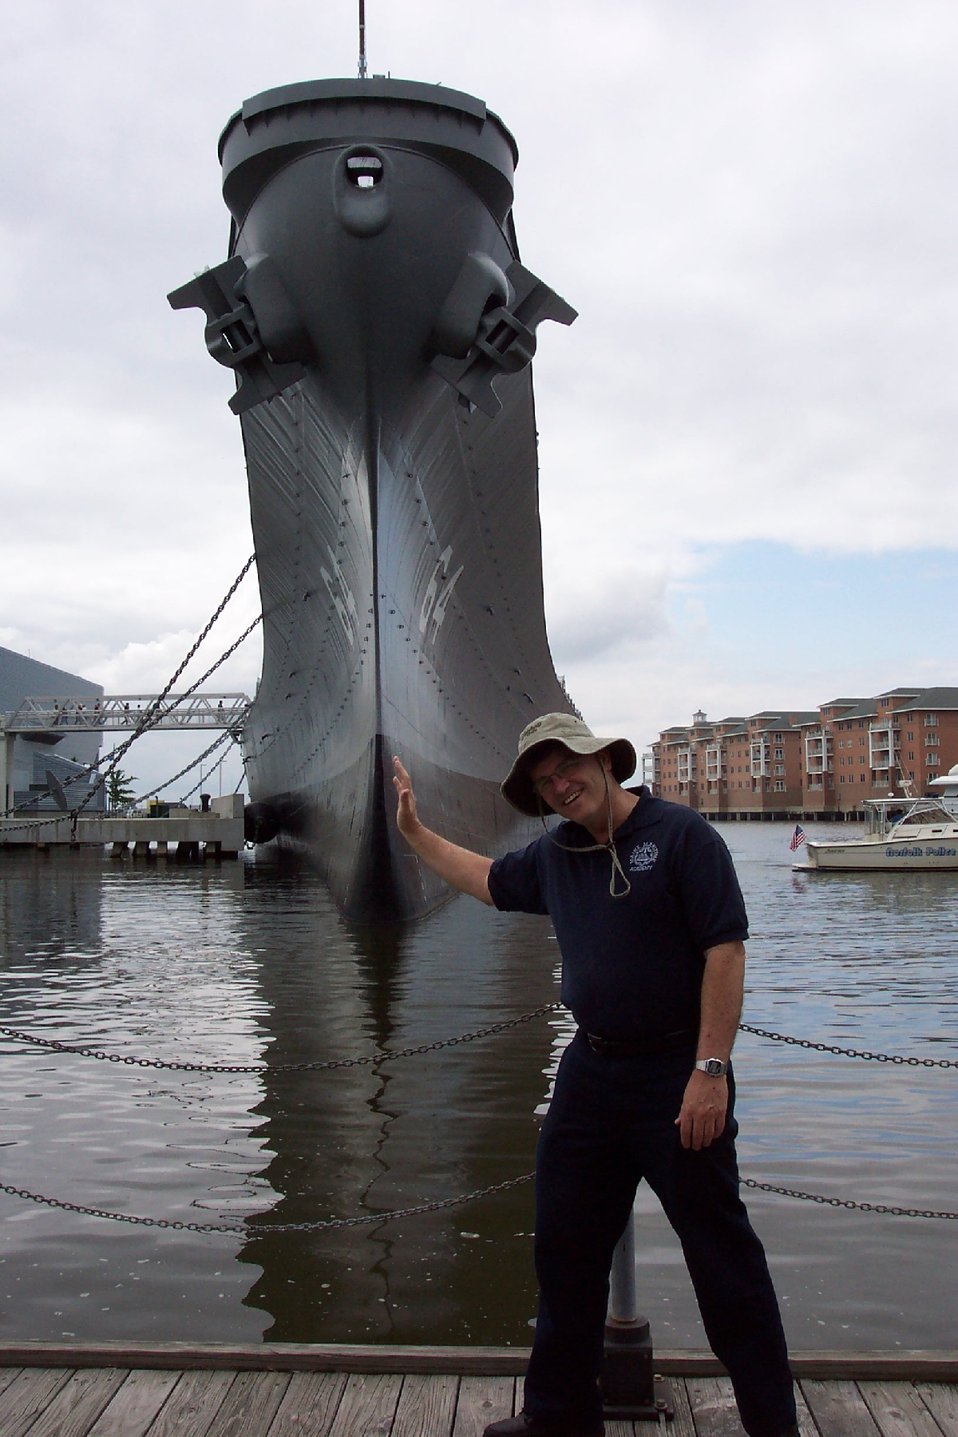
Giving the Battleship Wisconsin a stability test.